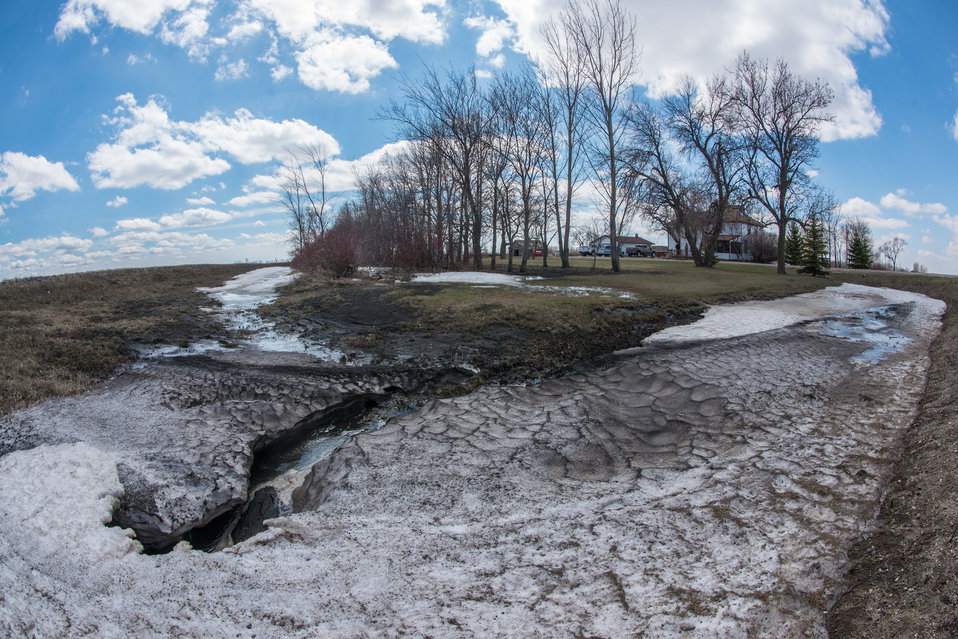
William Lisberg used the U.S. Department of Agriculture (USDA) Environmental Quality Incentives Program (EQIP) to receive an incentive payment to help in the cost of ring dike construction around his farmstead in Cass County, ND, on Tuesday, April 30, 2013. A week ago, the farmstead was completly covered in snow. Now thawing, the water fills the drainage outside the ring dike that protects his home, farm structures, and equipment.